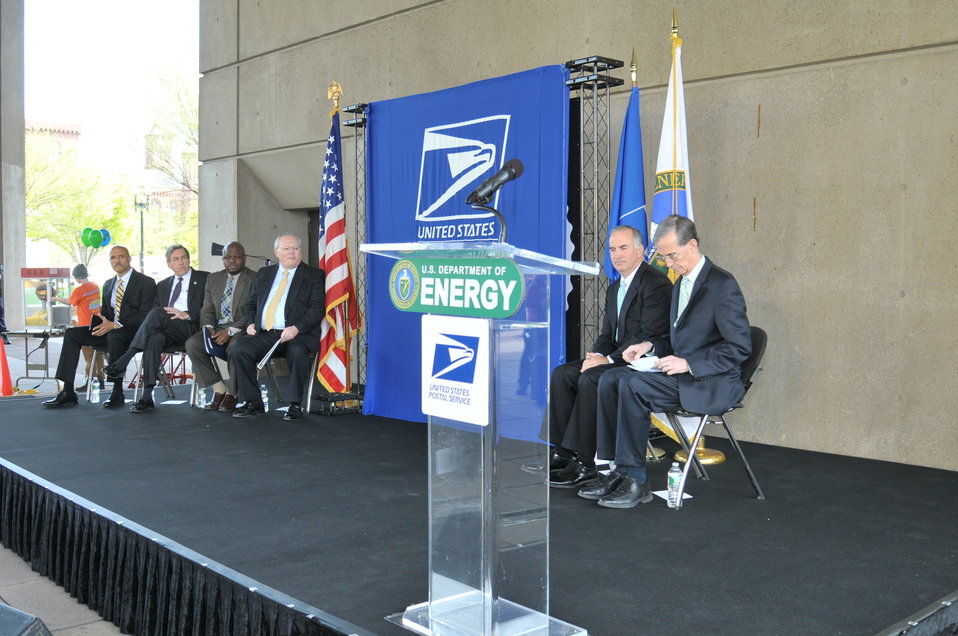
U.S Postal Services introduces a new Global: Sea Surface temperatures forever stamp at the Earth Day program at Department of Energy on April 22, 2014. ( DOE Deputy D.Poneman,T.Day, C.Williams, C.Anderson II, J.Colin Ph.D, Dr. K. Sullivan, K.Tobin Ph.D, W. Gicher Jr)